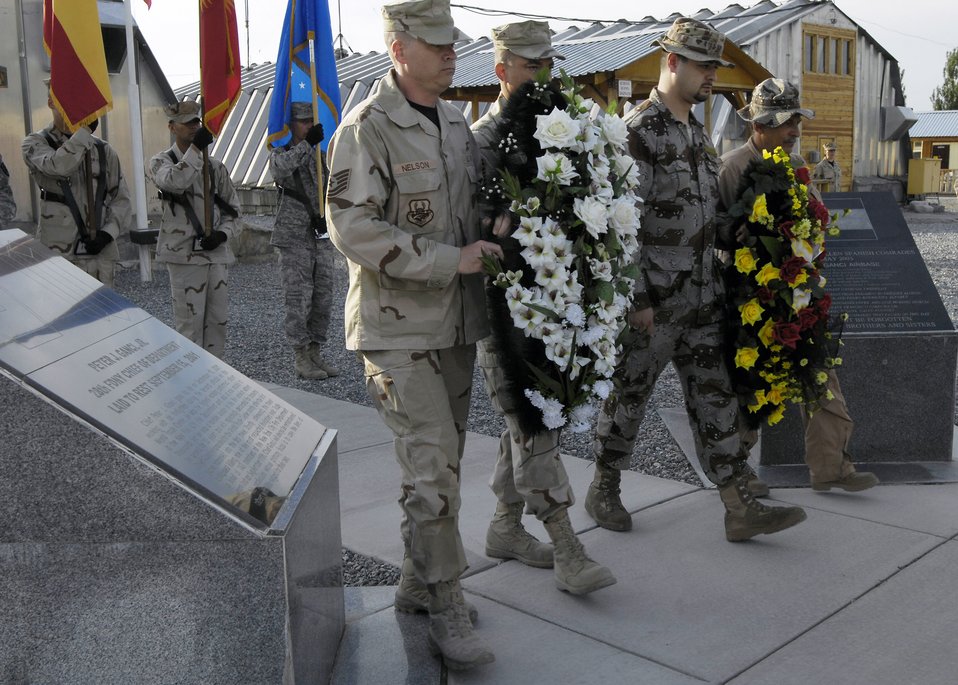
Manas AB Coalition team pauses to remember the fallen

Men and women of the 376th Air Expeditionary Wing, Manas Air Base, Kyrgyz Republic, and coalition team gathered to remember the fallen in a May 26 Memorial Day ceremony. The Manas AB coalition also paused to honor the fallen Spanish airmen and soldiers which marked the five year anniversary of 62 Spanish servicemembers lost in a 2003 commercial contract plane crash in Turkey.